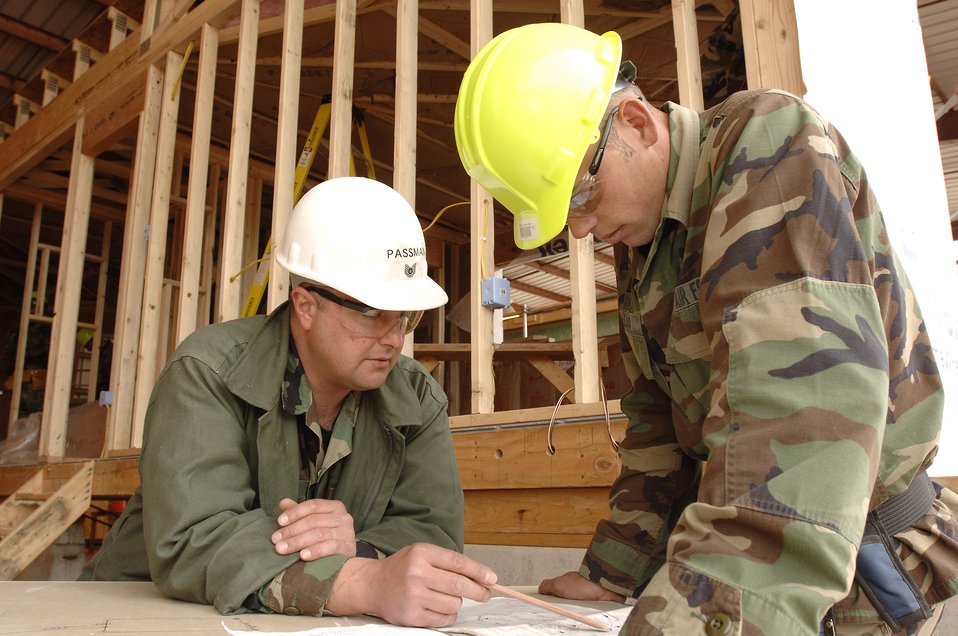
Summer lab gives cadets engineering experience

Tech Sgt. James Passman reviews electrical plans with Air Force Academy Cadet 2nd Class Forrest McLain during construction of a house being built by cadets. The cadets are participating in the Field Engineering and Readiness Laboratory course at the Academy that exposes them to several aspects of civil engineering, including heavy equipment operation, steel bridge construction, designing and pouring concrete beams and paving portions of a road. Sergeant Passman is with the 5th Civil Engineer Squadron at Minot Air Force Base, N. D.